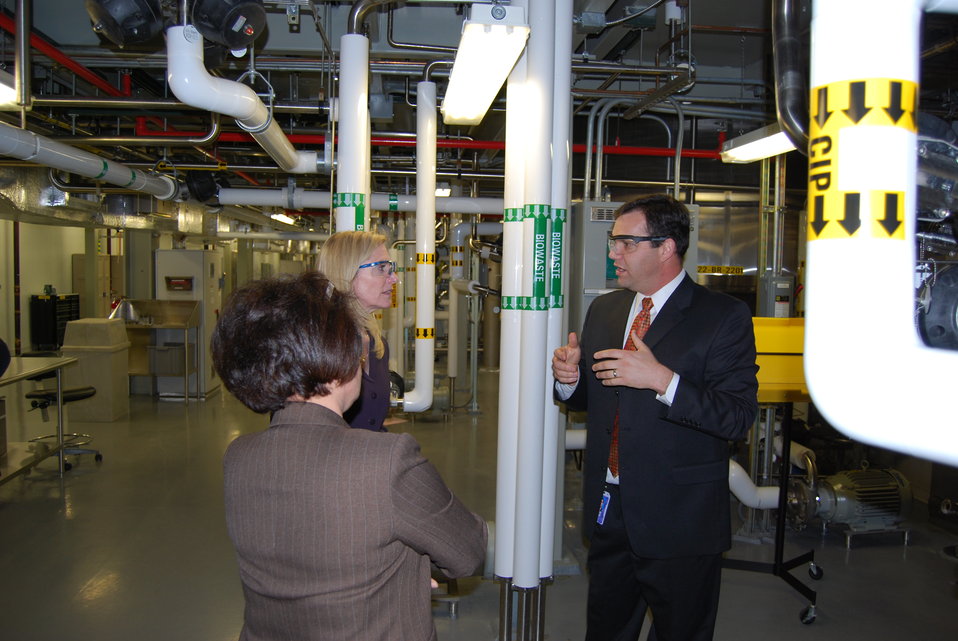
Lael Brainard in North Carolina

Under Secretary for International Affairs Lael Brainard touring a Biogen Idec facility in Research Triangle Park, North Carolina with Mitch Lower and Dr. Esther Alegria.